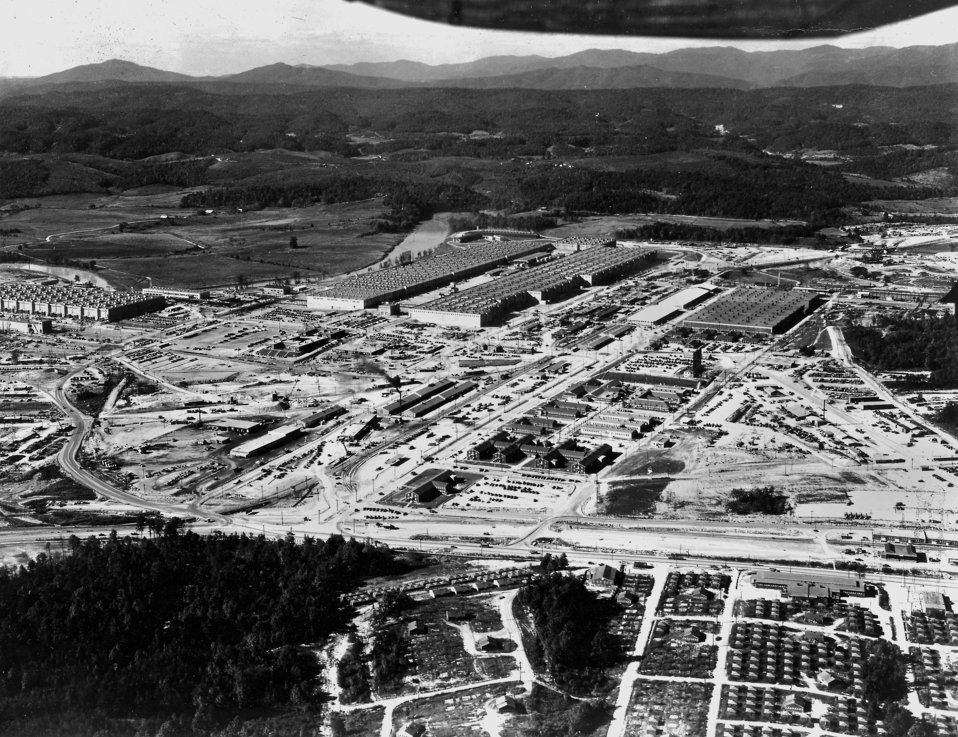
Construction Progress K-25 Plant, Aerial Oak Ridge

k-25-339 DOE photo by Ed Westcott Oak Ridge Tennessee 1946